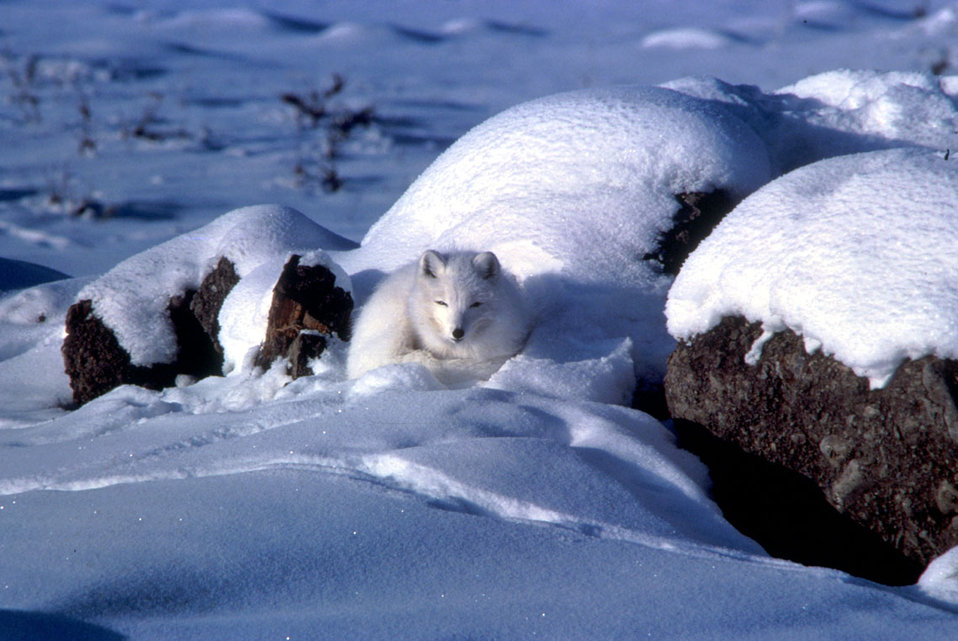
Arctic fox